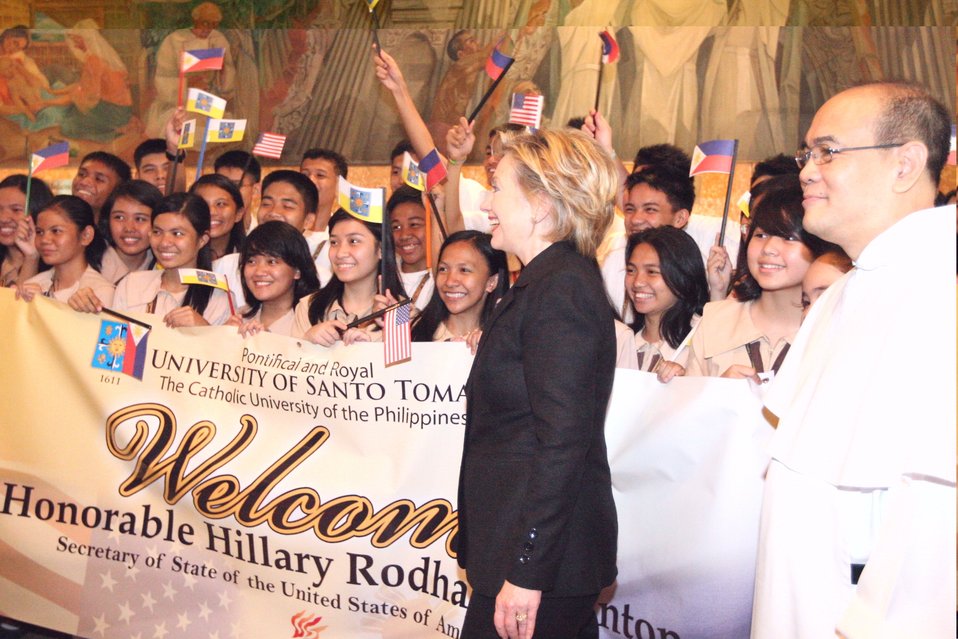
Secretary Clinton is Greeted By Students

U.S. Secretary of State Hillary Rodham Clinton smiles as she is greeted by students during a forum at the University of Santo Tomas in Manila, Philippines, November 12, 2009.